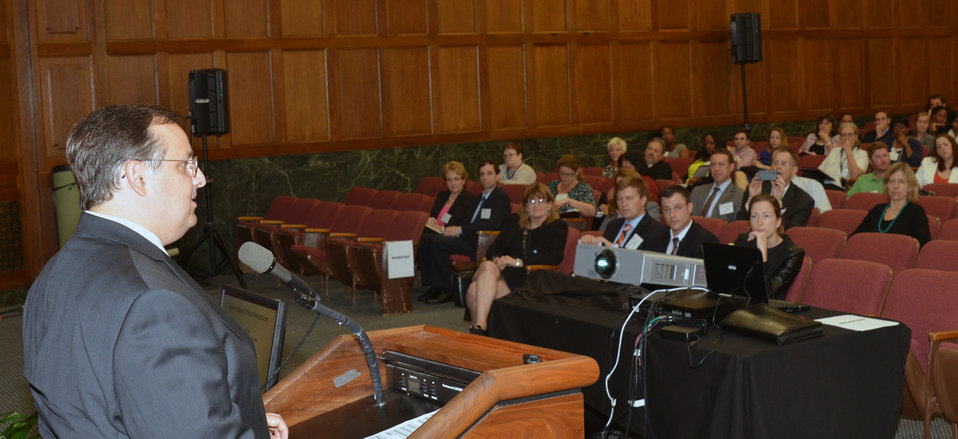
Stuart Bender makes remarks at the U.S. Office of Government Ethics training Preventing Conflict of Interest in the Executive Branch at the Jefferson Auditorium at the U.S. Department of Agriculture (USDA) in Washington, D.C. on Wednesday, Aug. 21, 2013.